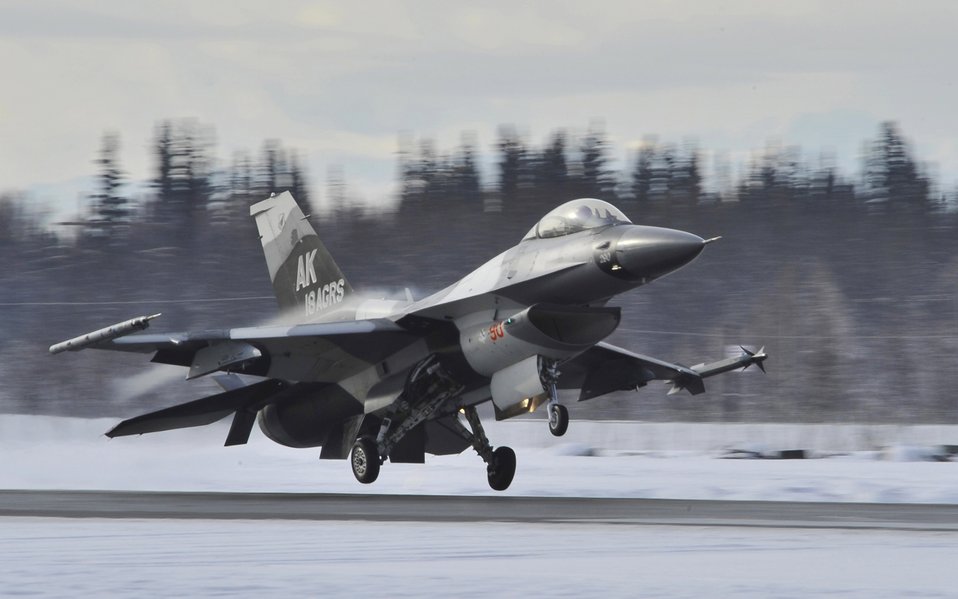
F-16s at Eielson

An F-16 Fighting Falcon touches down April 8, 2011, at Eielson Air Force Base, Alaska.